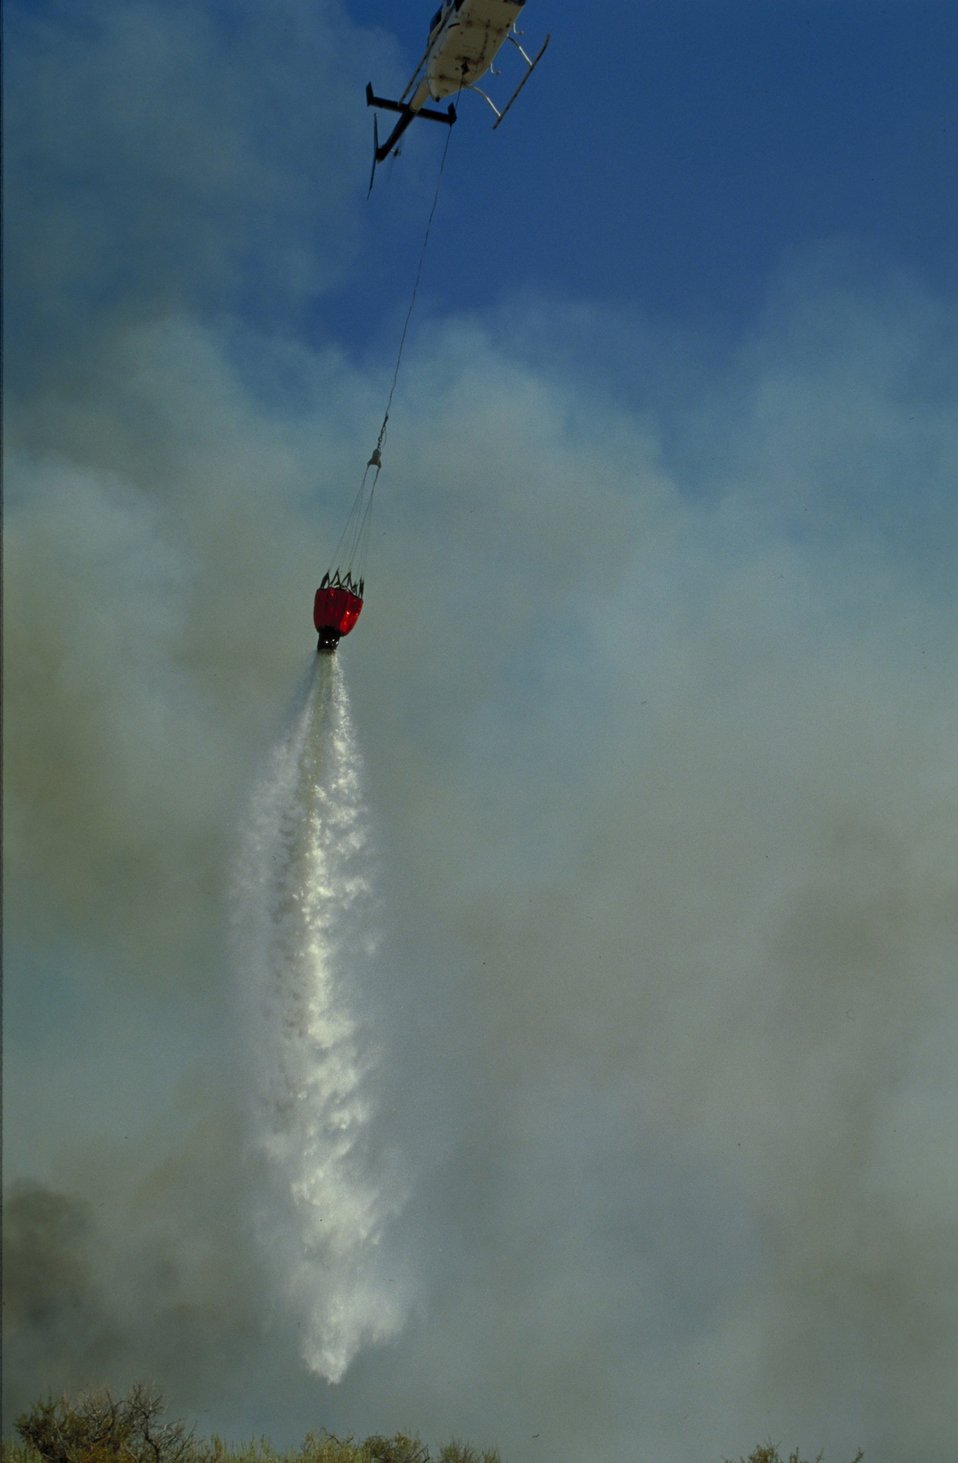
Helicopter bucket drop Fire Season 2000 Lower Snake River District LSRD